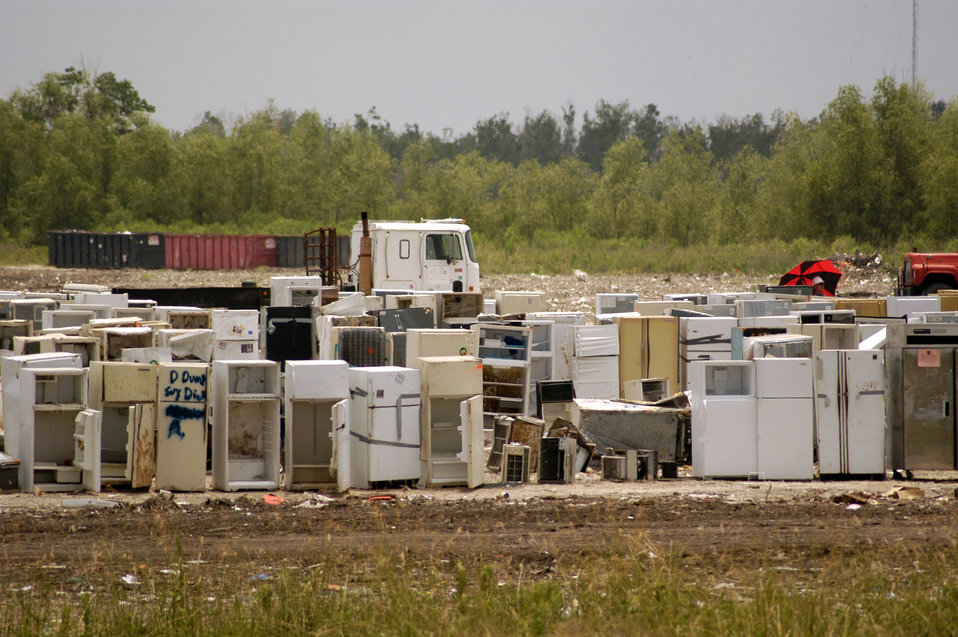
Thousands of refrigerators and freezers (White Goods) had to be disposed of in an environmentally directed manner. The “White Goods” had to have months old rotten food removed from the units and disposed of at a compost site. The Freon needed to be drained from the motors and sent to an environmental disposal site for toxic waste. The shells of the “White Goods” could then be sent to a metal recycling plant. An interesting anecdote for this site was the director was a veteran with no sense of smell, which was a great asset in managing this particular project. Katrina made landfall on Monday morning, August 29, 2005 as a Category 3 hurricane with sustained winds of 125/mph with over a 20-foot storm surge. Katrina caused catastrophic damage over 90 thousand square miles across Louisiana with an estimated $75 billion dollars in damage. The total economic impact to the Gulf Coast was estimated at over $150 billion. 80% of New Orleans, LA, was underwater with some areas more than 20 feet deep. Less than a month later southern Louisiana was struck by a second Category 3 hurricane Rita inflicting more damage in the southwestern areas of Louisiana adding an addition $12 billion worth of damage to the already beleaguered state. The U.S. Army Corps of Engineers (USACE) under the auspices of Federal Emergency Management Agency (FEMA) was the lead service in providing assistance to the citizens of Louisiana. The U. S. Department of Agriculture (USDA) supplied emergency food aid, emergency loan assistance to farmers and home owners, and USDA personnel from around the nation volunteered their time and muscle to aid in the recovery operations.